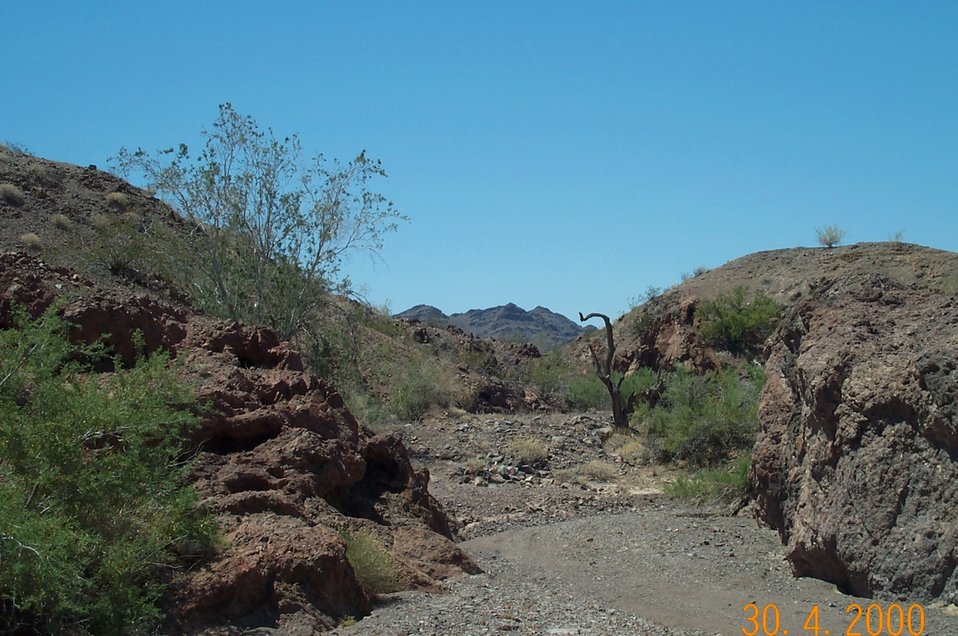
Desert wash